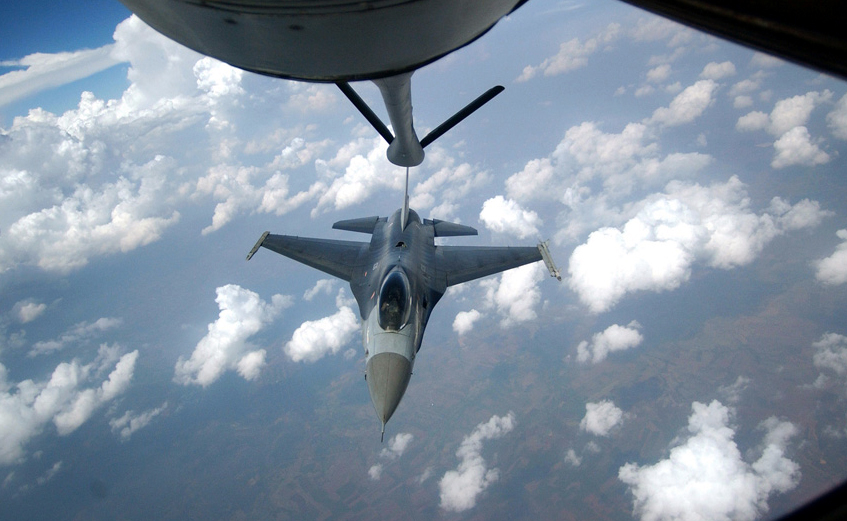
Exercise under way in Thailand

KORAT AIR BASE, Thailand (AFPN) -- An F-16 Fighting Falcon prepares for refueling by a KC-135 Stratotanker from the 909th Air Refueling Squadron at Kadena Air Base, Japan, during Cope Tiger 2003. Cope Tiger is an annual joint/combined air-to-air, air-to-ground and large force employment training exercise.